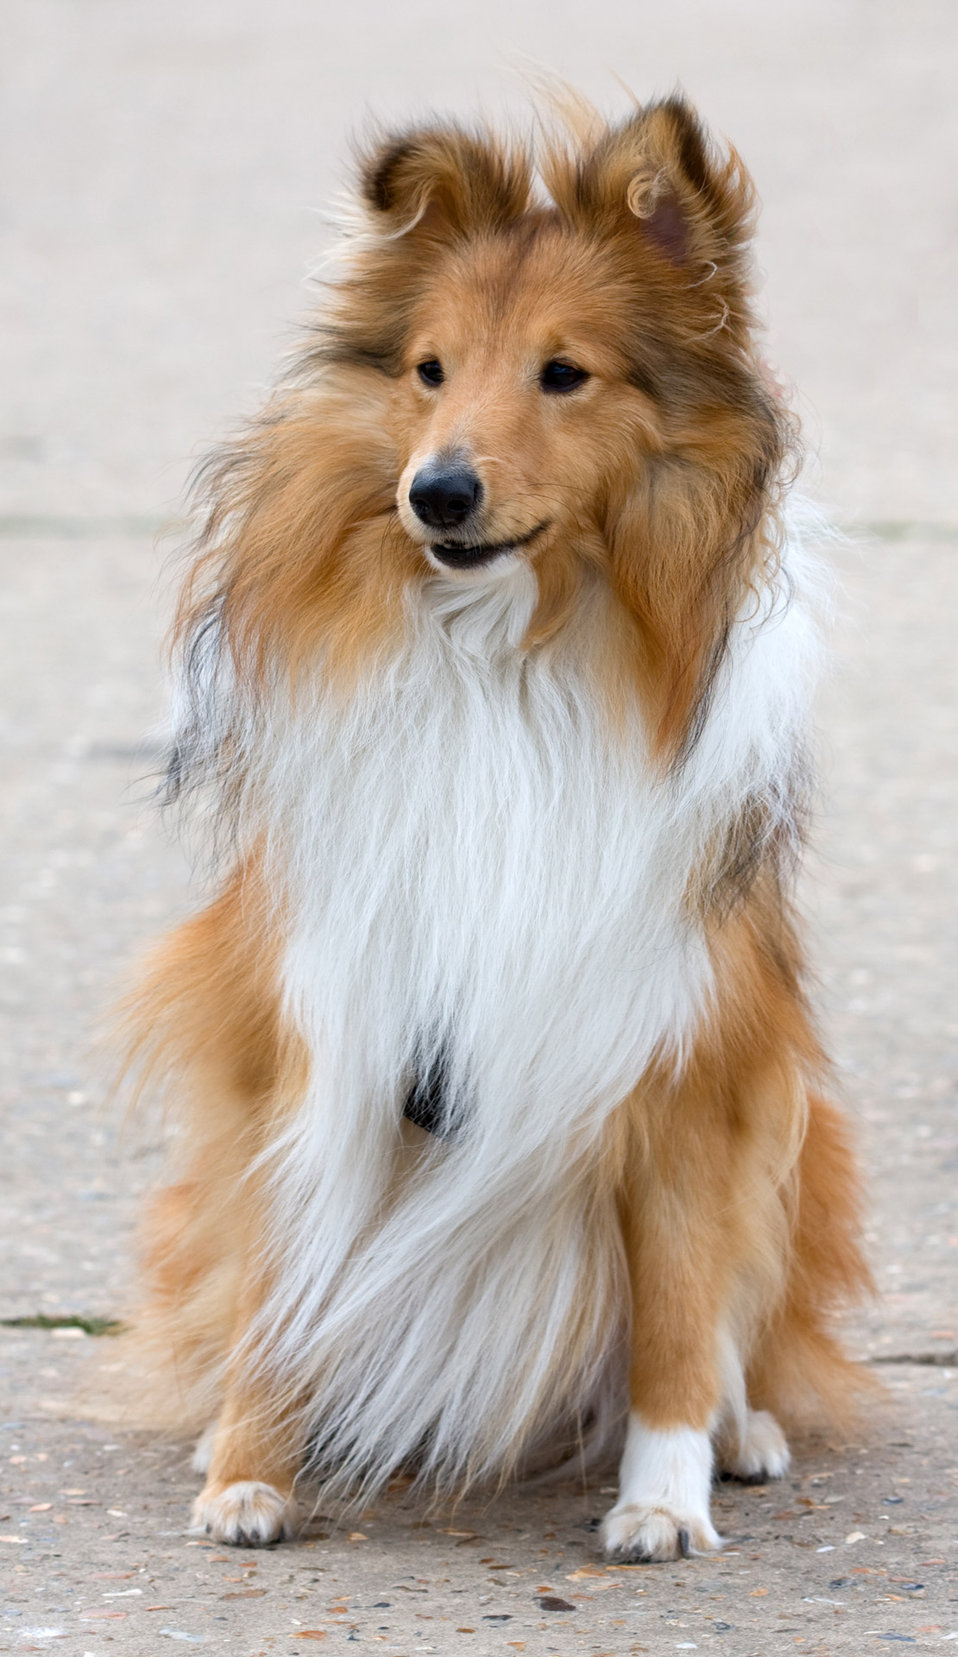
Sheltie dog

Cute little shetland sheepdog, sheltie dog image.